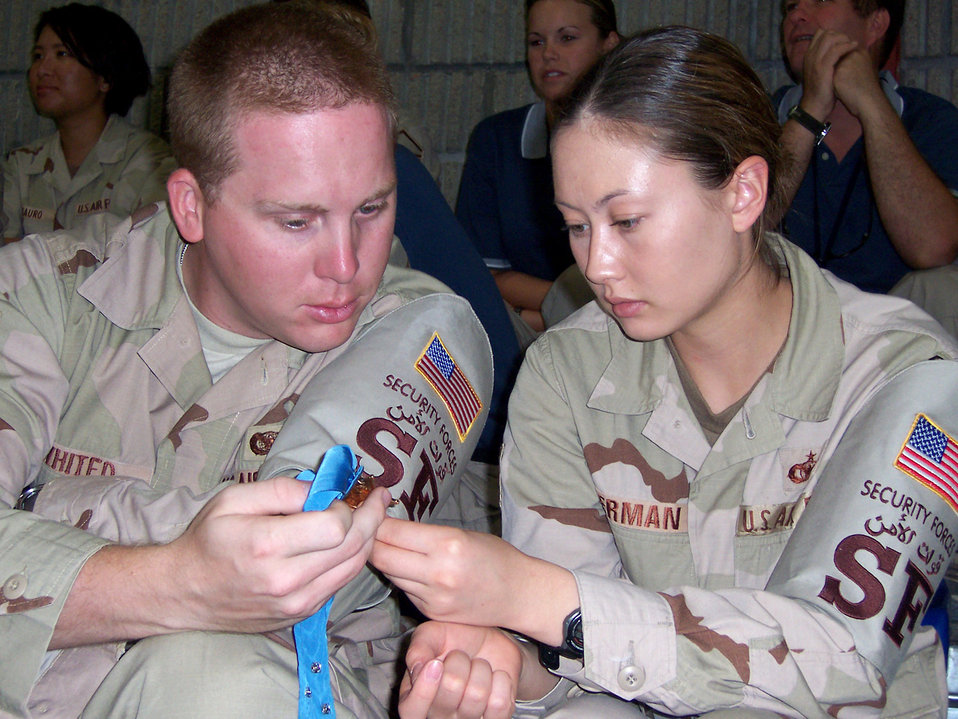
Medal of Honor recipients share stories of inspiration

379th Expeditionary Security Forces Squadron Airmen Senior Airman Justin Whited and Staff Sgt. Jennifer Sherman inspect a Medal of Honor. The two Airmen listened to Medal of Honor recipients Army Col. Robert Howard, Marine Capt. John McGinty III, and Army Command Sgt. Maj. Gary Littrell, all retired, share their messages of hope and patriotism at an assembly Nov. 3 at a base in Southwest Asia.